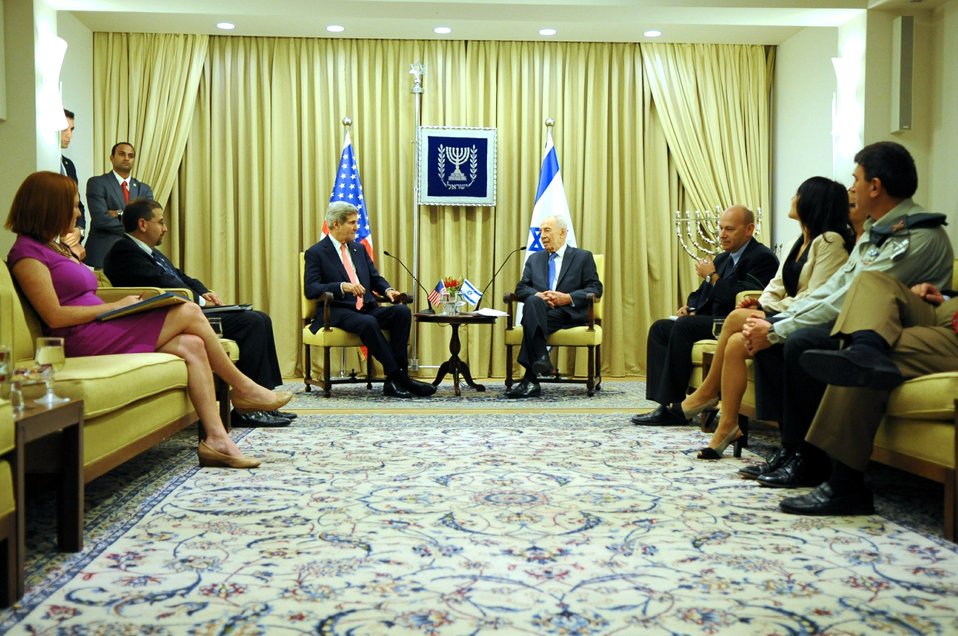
Secretary Kerry Speaks With Israeli President Peres

U.S. Secretary of State John Kerry speaks to Israeli President Shimon Peres at the outset of a meeting about Middle East peace in Jerusalem on November 6, 2013.